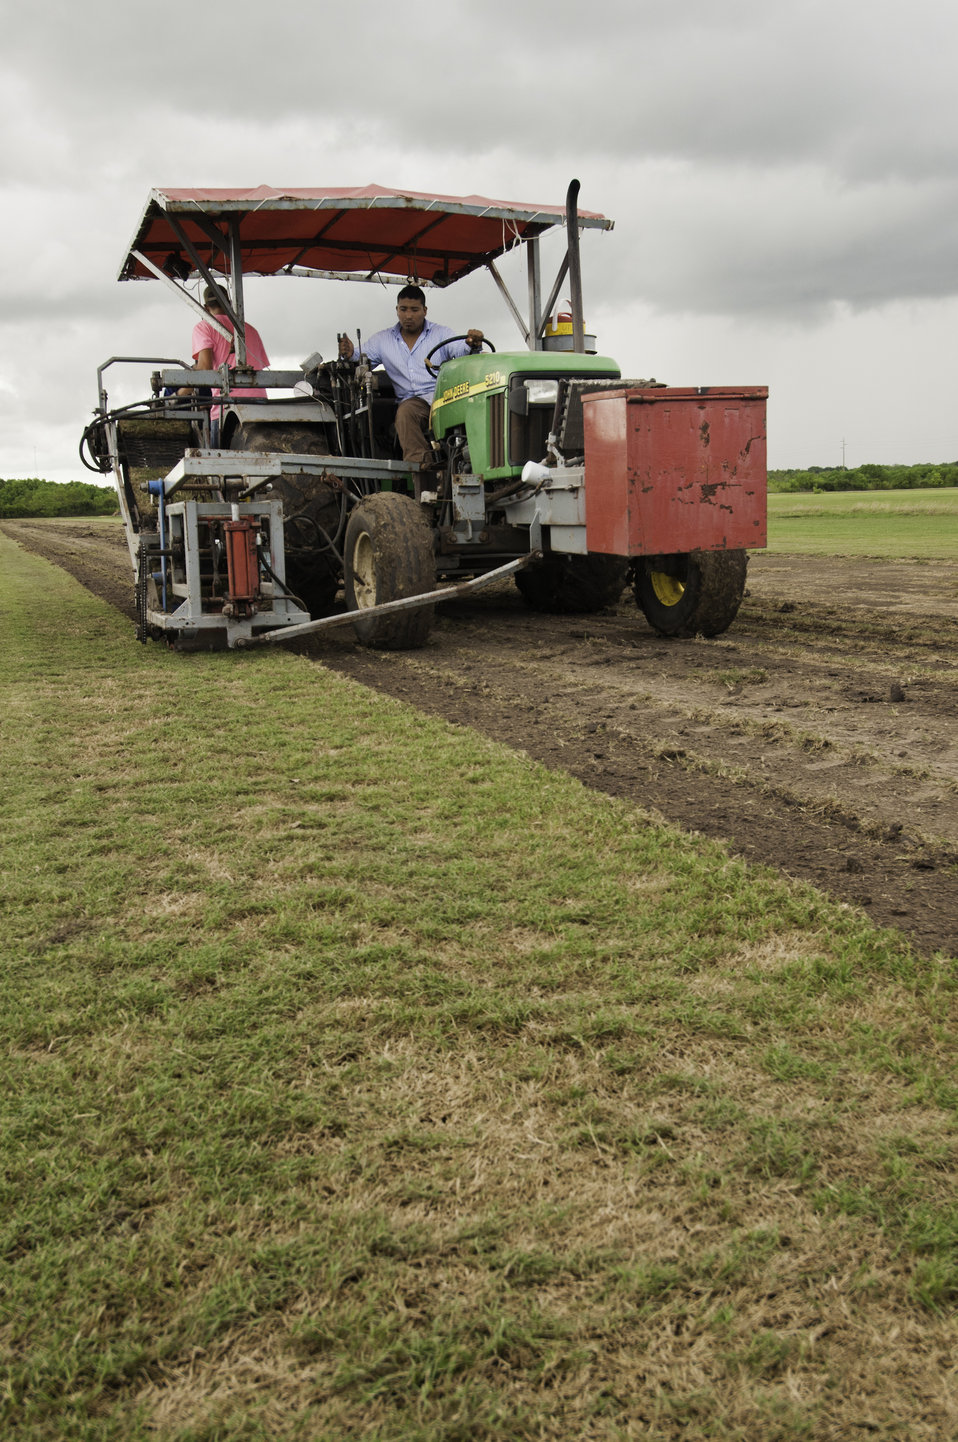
Sod used in landscaping is harvested on the Quality Turf Farms in Guy, TX on Aug. 23, 2013.